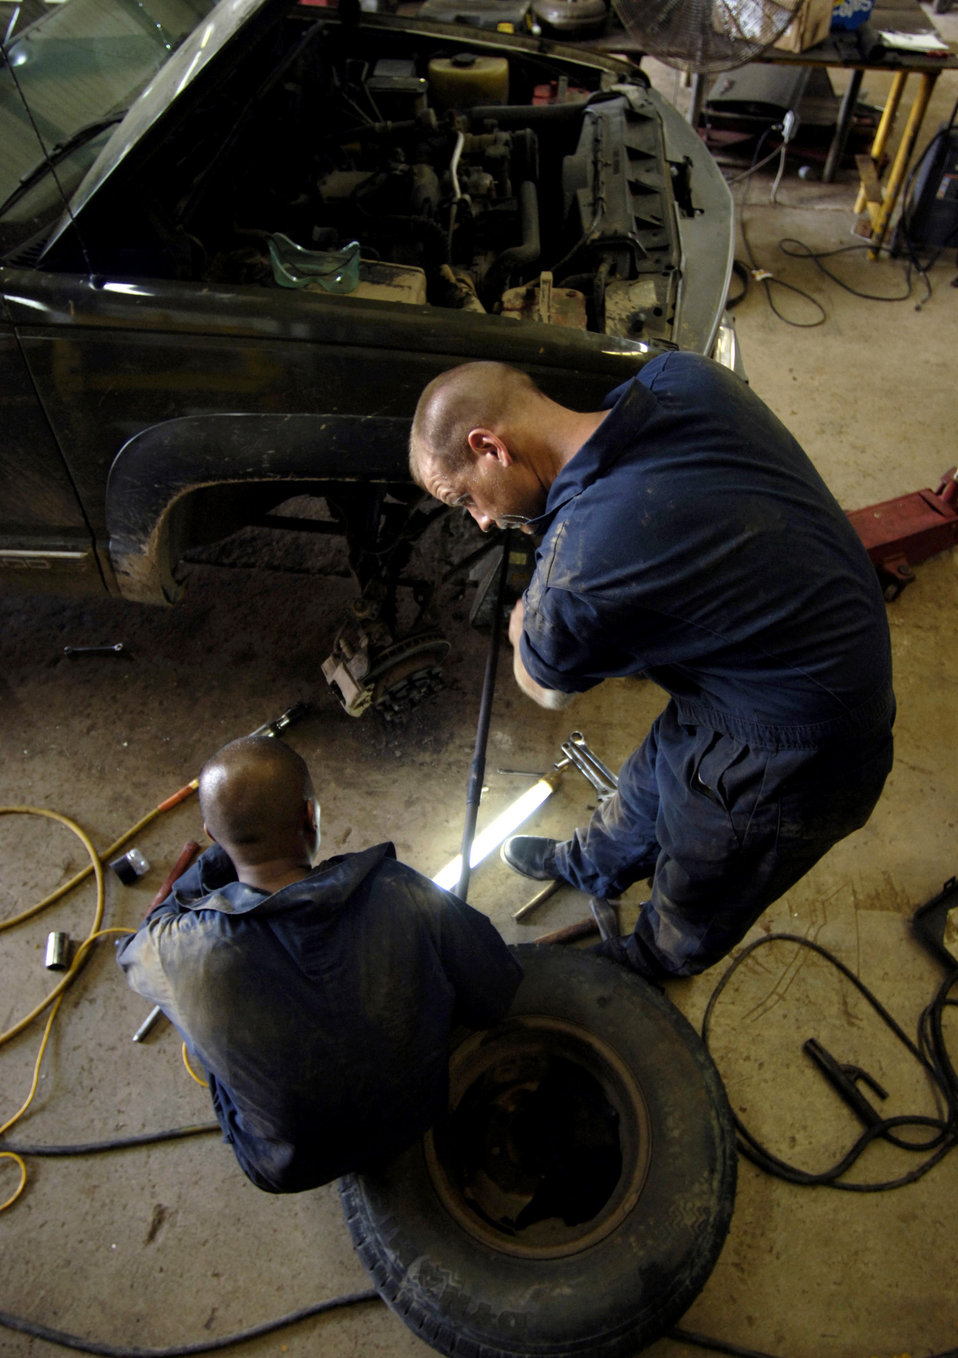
CAT apprentice program

BABLEDAOB, Palau (AFPN) -- Vehicle maintainer Tech. Sgt. Matt Schott helps his Palauan apprentice fix a pick up truck. Sergeant Schott is part of the Air Force civic action team here. The team's mission is twofold: help develop Palau's basic infrastructure development and provide a favorable U.S. military presence. The team does this through community construction, apprentice training, medical civic action program and community relations.